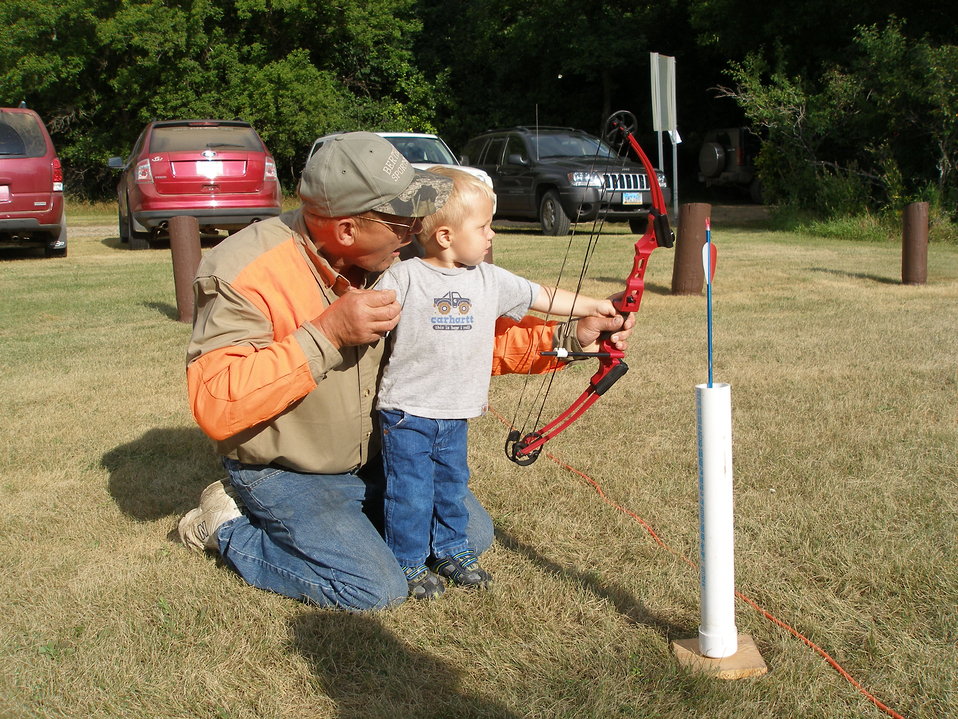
2011 Greenwing Day - Archery Session

Des Lacs National Wildlife Refuge, Tasker's Coulee

ALL ages were able to participate - it is very important to show youth at an early age how fun the outdoors can be!